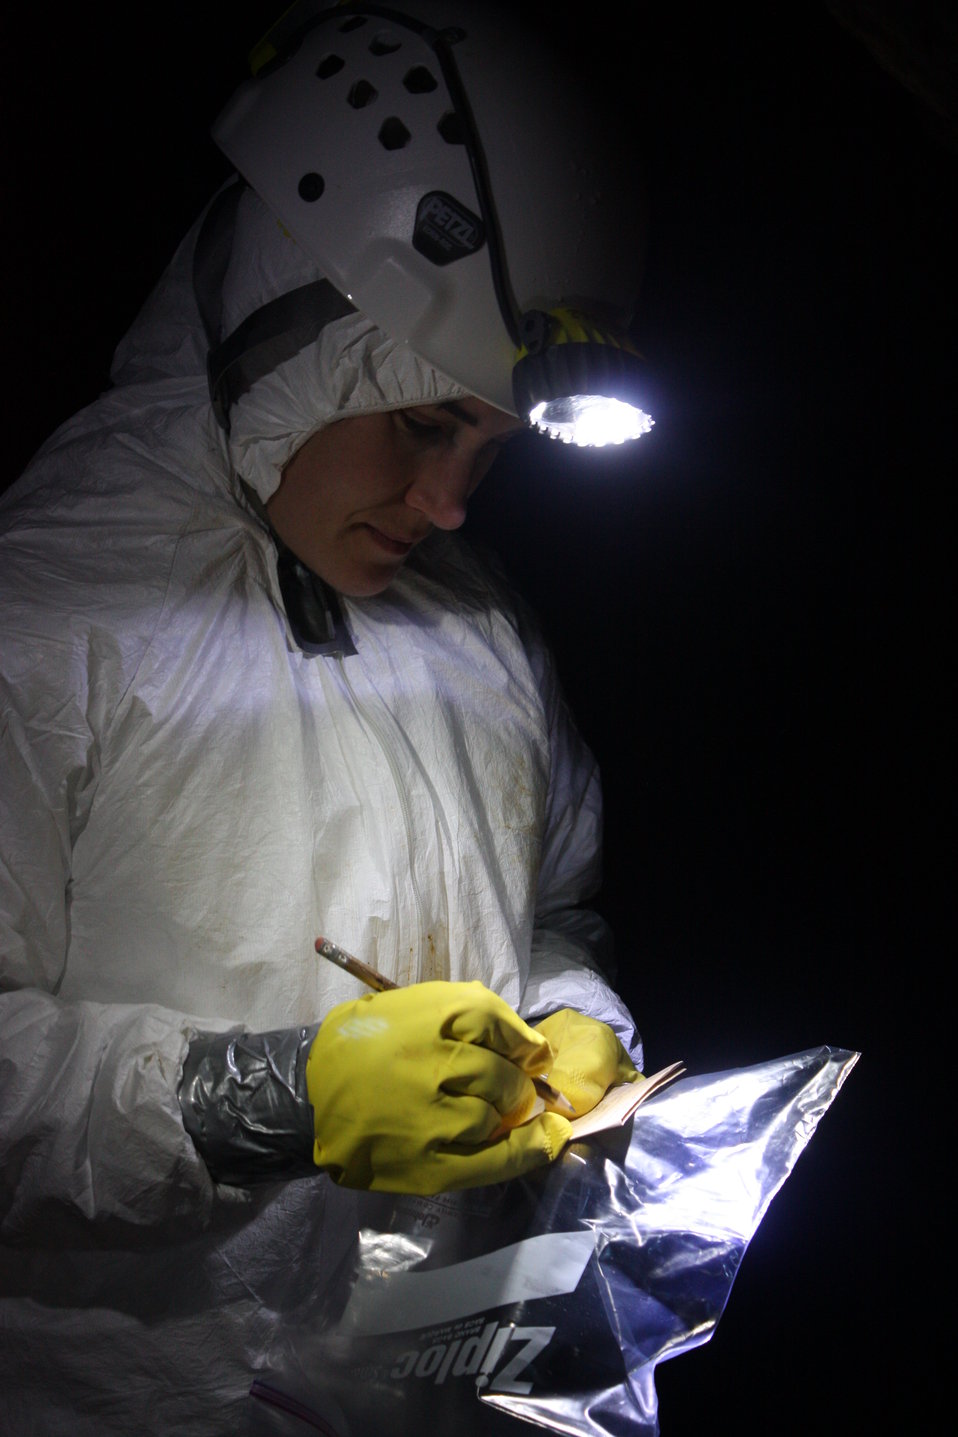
NCWRC biologist Gabrielle Graeter taking notes underground